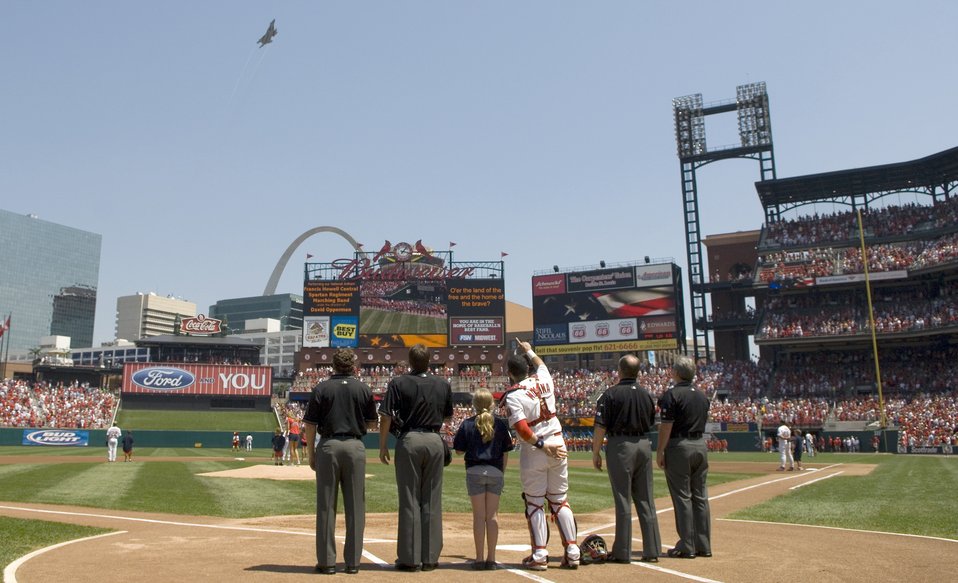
Air Force blue meets Cardinal red

An F-15 Eagle from the 131st Fighter Wing based at St. Louis International Airport flies over opening ceremonies of the St. Louis Cardinals game at Busch Stadium on Aug. 6. The flyover was part of a ceremony kicking off Air Force Week in St Louis. The Cardinals beat the Milwaukee Brewers 7-1.